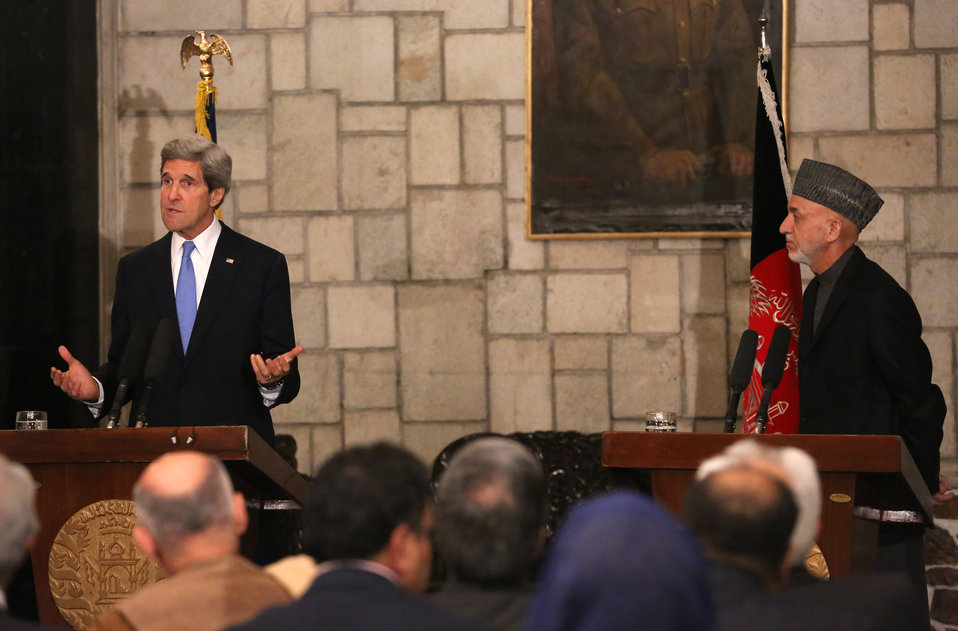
Secretary Kerry Delivers Remarks With Afghan President Karzai

U.S. Secretary of State John Kerry delivers remarks with Afghan President Hamid Karzai during a joint press conference at the Presidential Palace in Kabul, Afghanistan on March 25, 2013.